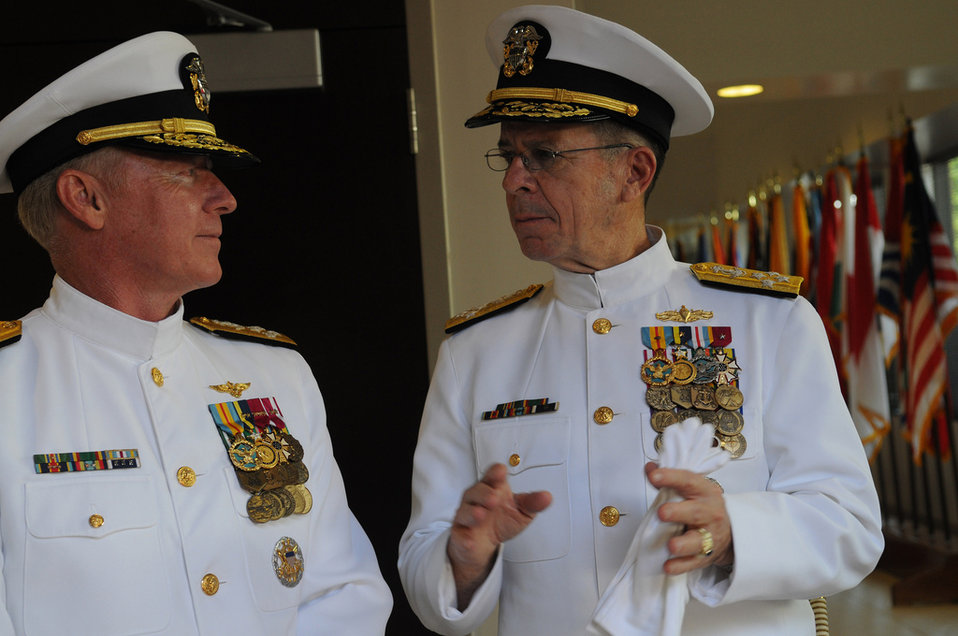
PACOM change of command

Adm. Robert F. Willard, incoming commander of U.S. Pacific Command, and Adm. Mike Mullen, chairman of the Joint Chiefs of Staff, speak at the conclusion of the U.S. PaCom change of command ceremony Oct. 19, 2009, at Camp H.M. Smith, Hawaii. Admiral Willard, former U.S. Pacific Fleet commander, assumed command of U.S. PaCom from Adm. Timothy J. Keating during the ceremony.